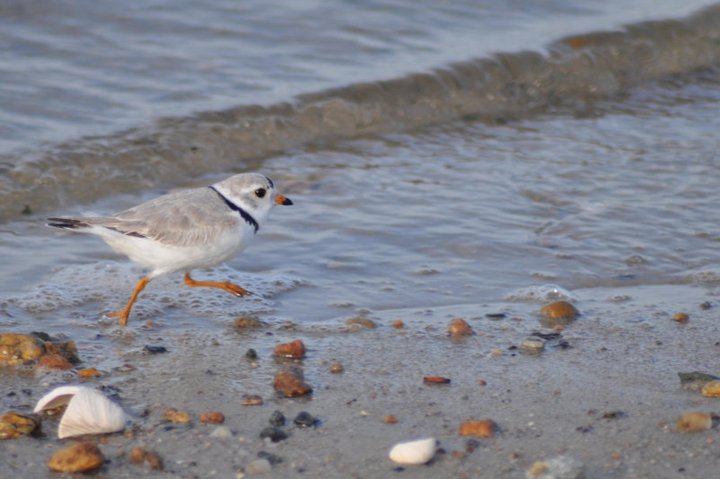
Piping Plover

A piping plover at the Nantucket National Wildlife Refuge, MA.